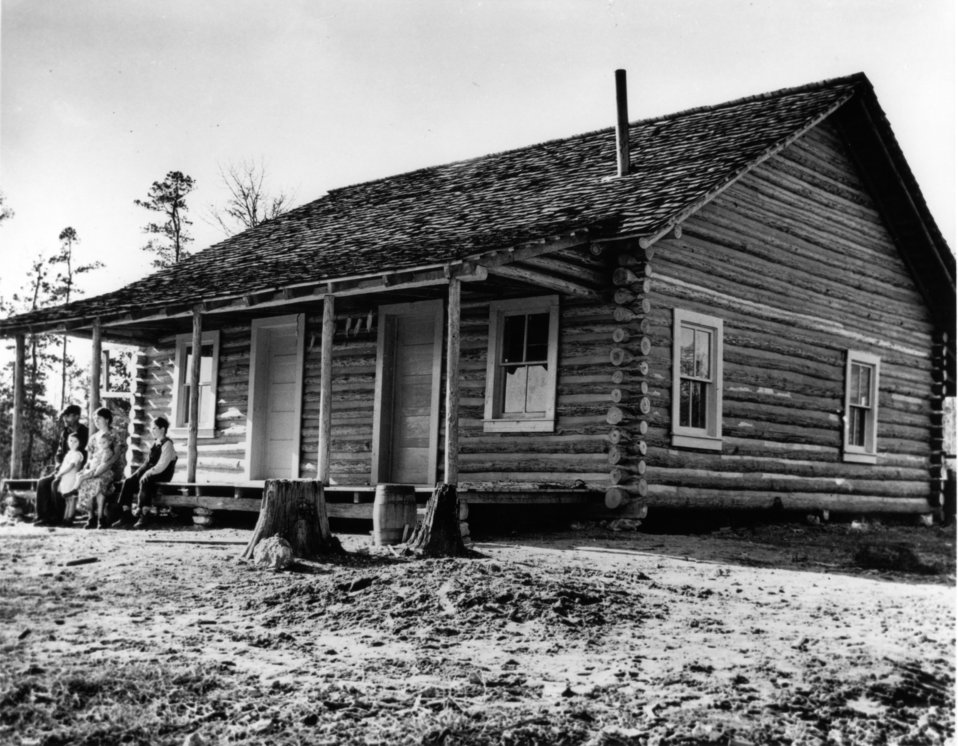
Early settlers at Oak Ridge